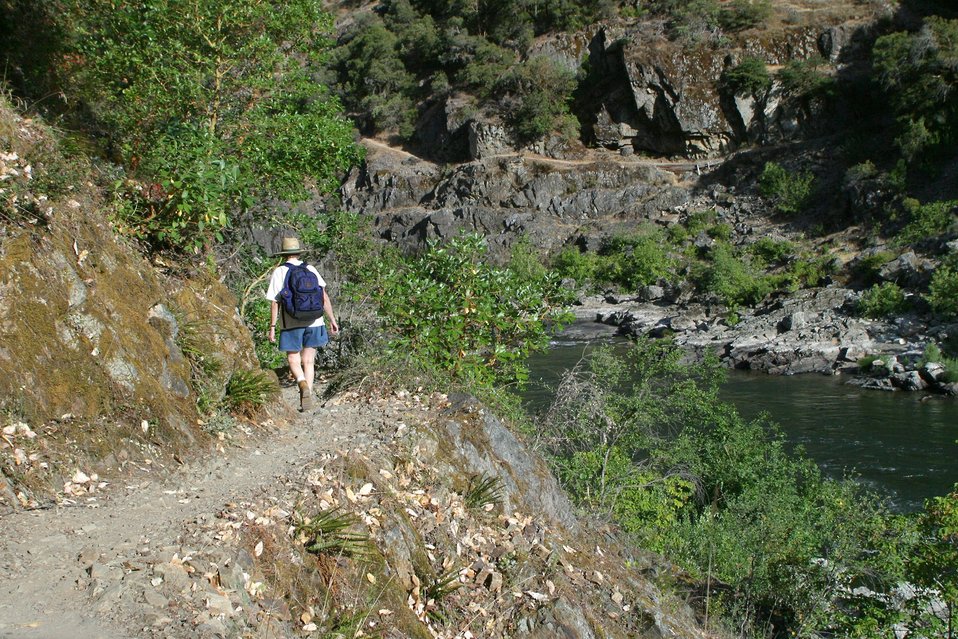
Hiking Rainie Falls Trail between Grave Creek and Rainie Falls.